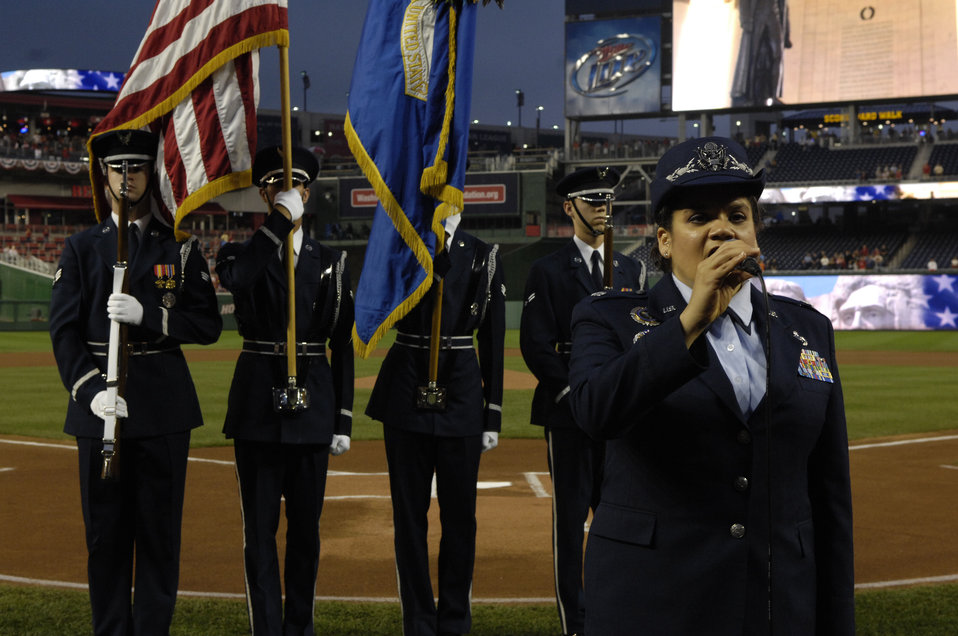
Air Force participates in major league game

Lieutenant Col. Katherine Strus, director of military personnel for the National Geospatial Intelligence Agency in Bethesda, Md., sings the National Anthem during the Washington Nationals Air Force Appreciation Night held Aug. 29 at Nationals Park in Washington, D.C. This was the first time the Washington Nationals Major League Baseball team held an event honoring the Air Force at the new park.